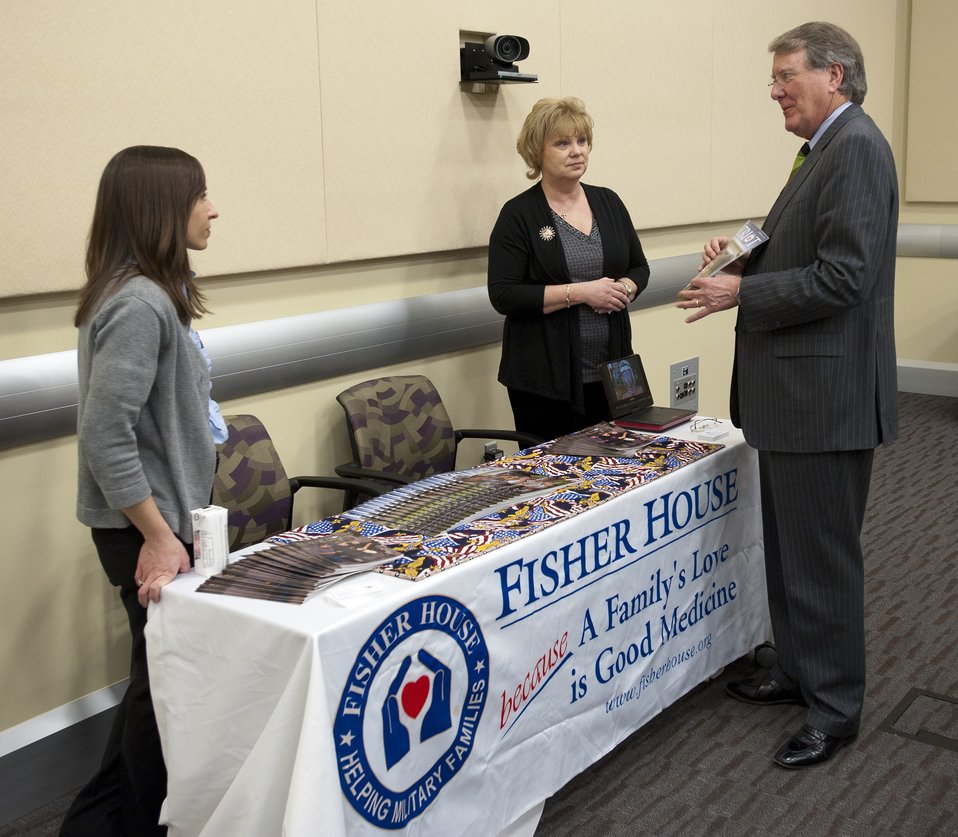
Civic leader conference

Doug King (right), from the Joint Base Lewis-McChord, Wash., area, speaks with
representatives from the Fisher House Foundation during an Air Force civic
leader conference at Joint Base Andrews, Md., Jan. 31, 2012.